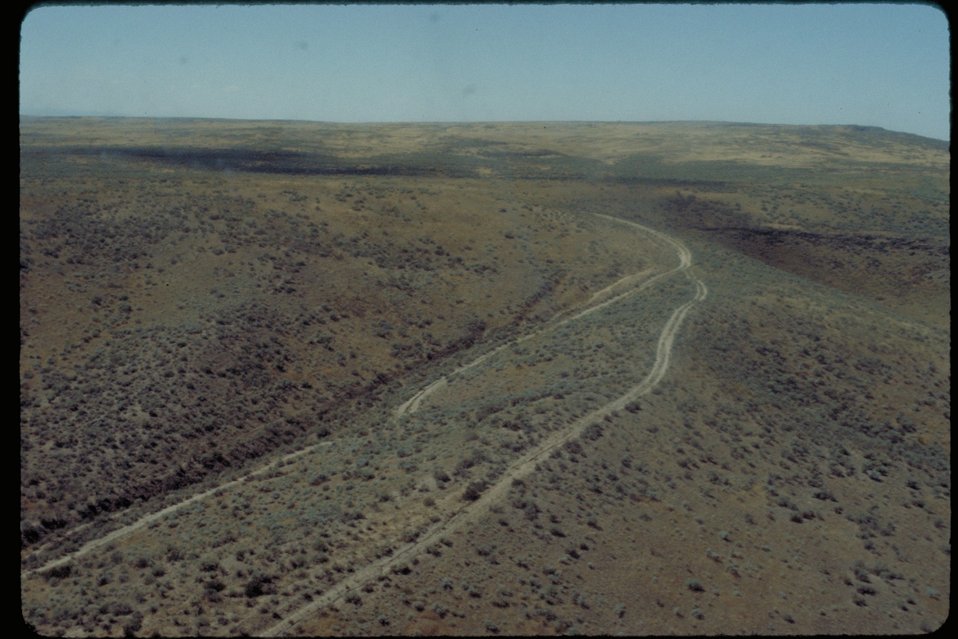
Oregon Trail southeast of Mayfield Lower Snake River District